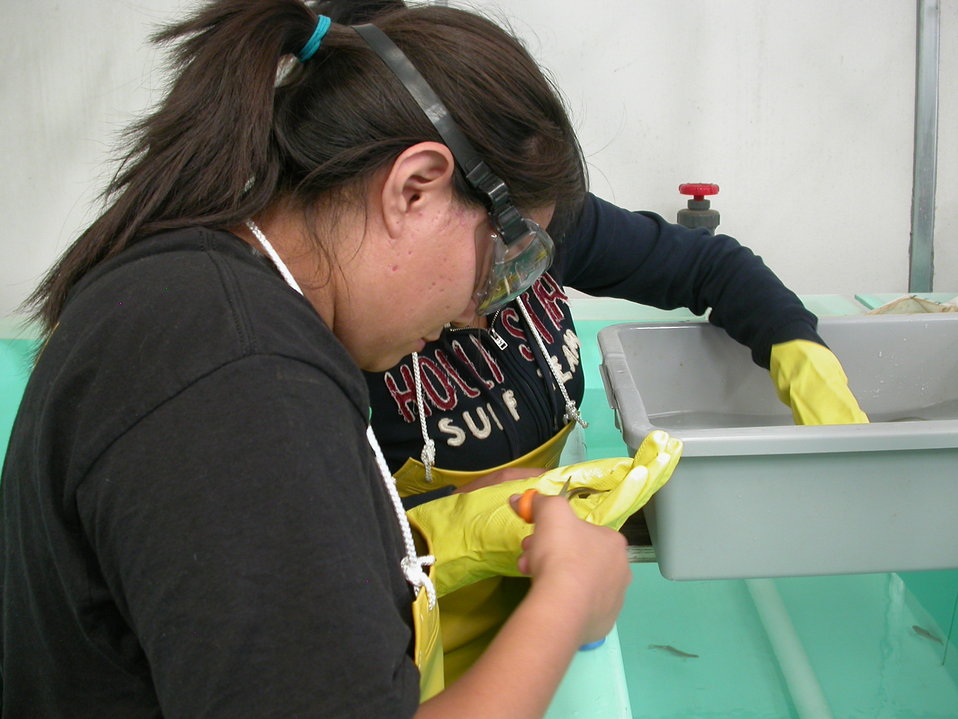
Working in a Fishery